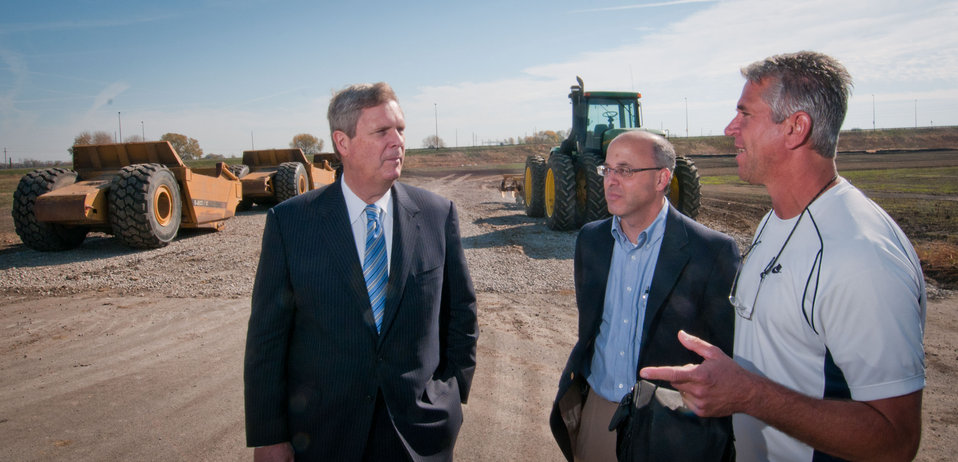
U.S. Department of Agriculture Secretary Tom Vilsack (left) talks with Illinois Department of Transportation’s Sal Madonia (center) and John Sestak (right) during a visit of a recently completed transportation project that extended the existing MacArthur Boulevard and new interchange with Interstate 72, this brought new businesses and 500 new jobs to Springfield, IL on November 2, 2011. Agriculture Secretary Tom Vilsack discussed the Administration's strategy to strengthen the U.S. economy and to highlight what passage of the American Jobs Act will mean for Illinois. 'The American Jobs Act provides common-sense steps we can take right now to put more people back to work and put more money in the pockets of working Americans, without adding a dime to the deficit,' said Secretary Vilsack. 'In Illinois, this Act will provide a tax cut for over 260,000 businesses, support the jobs of 14,500 teachers and first responders and immediately provide a job for over 20,700 construction workers through infrastructure improvements. A typical household in Illinois will receive a tax cut of around $1,640.'